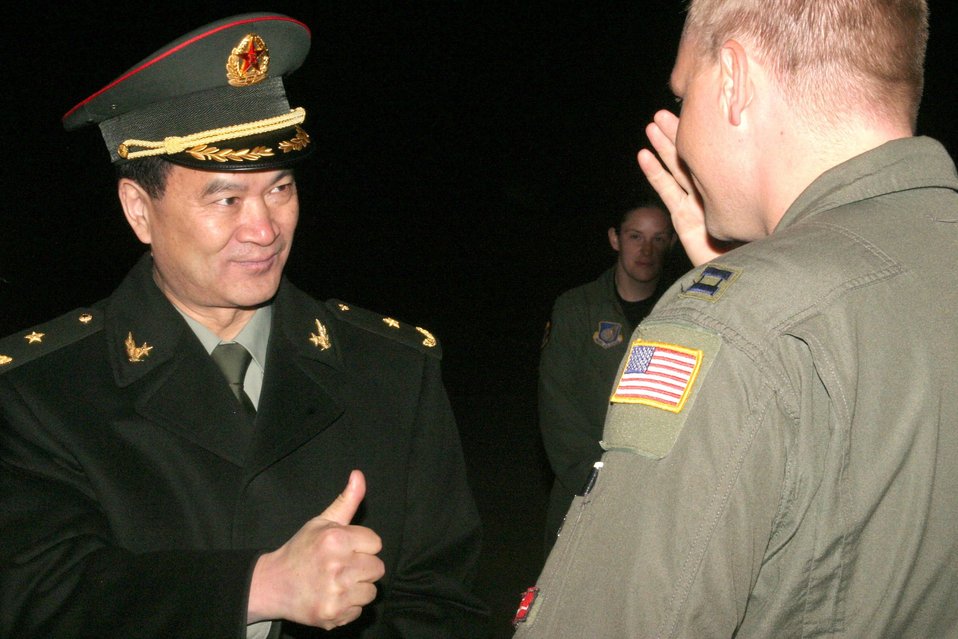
Air Force delivers humanitarian supplies to China

After returning a salute, Major General Lihua Qian, People?s Liberation Army, gives a thumbs-up sign to U.S. Air Force Capt. Dave Ericson, 535th Airlift Squadron, 15th Airlift Wing, Hickam Air Force Base, Hawaii. Thirteenth Air Force's 613th Air and Space Operations Center Air Mobility Divsion at Hickam AFB coordinated the delivery of 225,890 pounds of relief supplies to Shanghai within 18 hours of Secretary of Defense approval. Recently, 19 Chinese provinces experienced the most severe winter storms in 50 years, imposing severe hardships on millions of Chinese citizens.